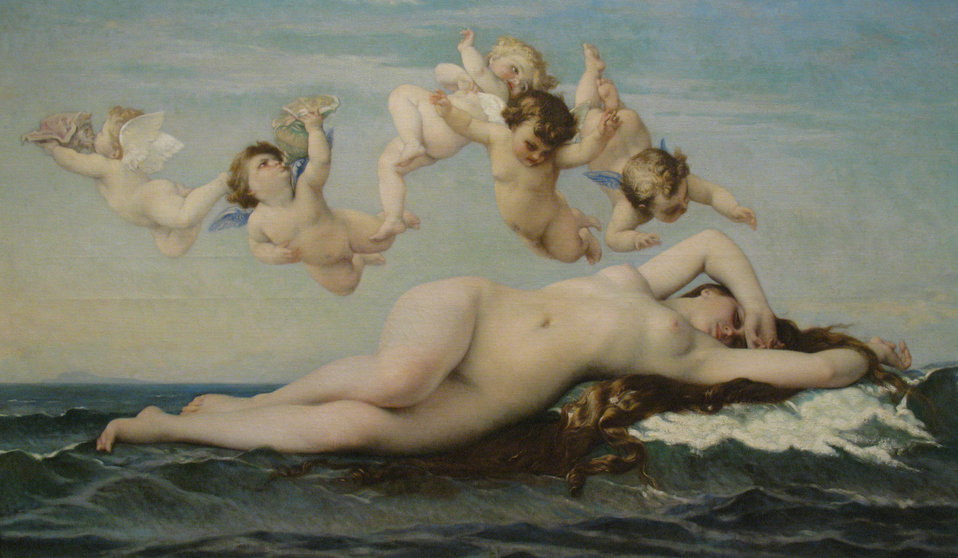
1875 Alexandre Cabanel Birth of Venus anagoria